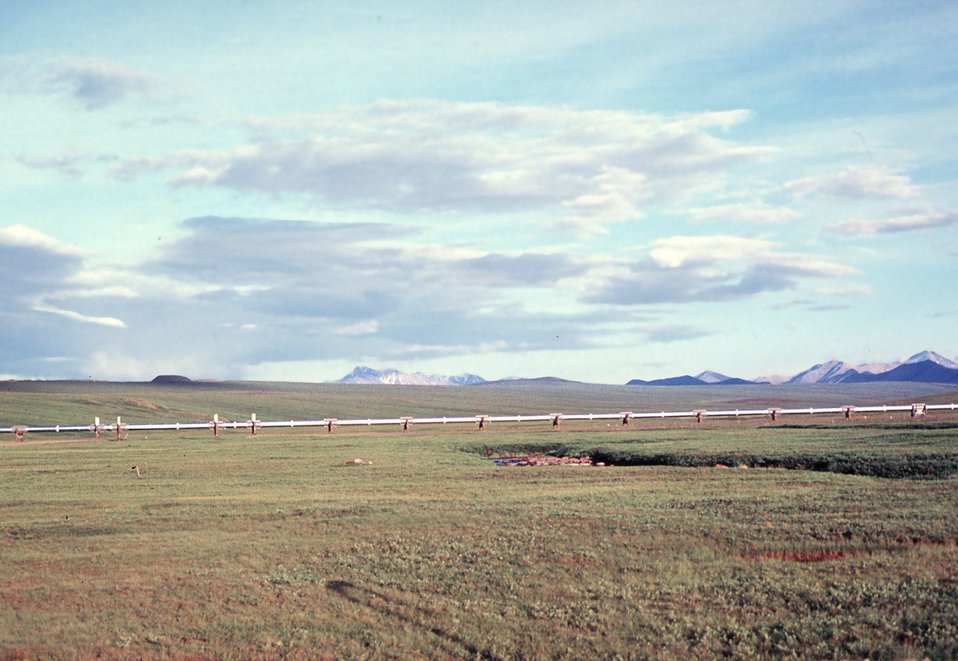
Trans-Alaska Pipeline, North Slope, Dalton Highway